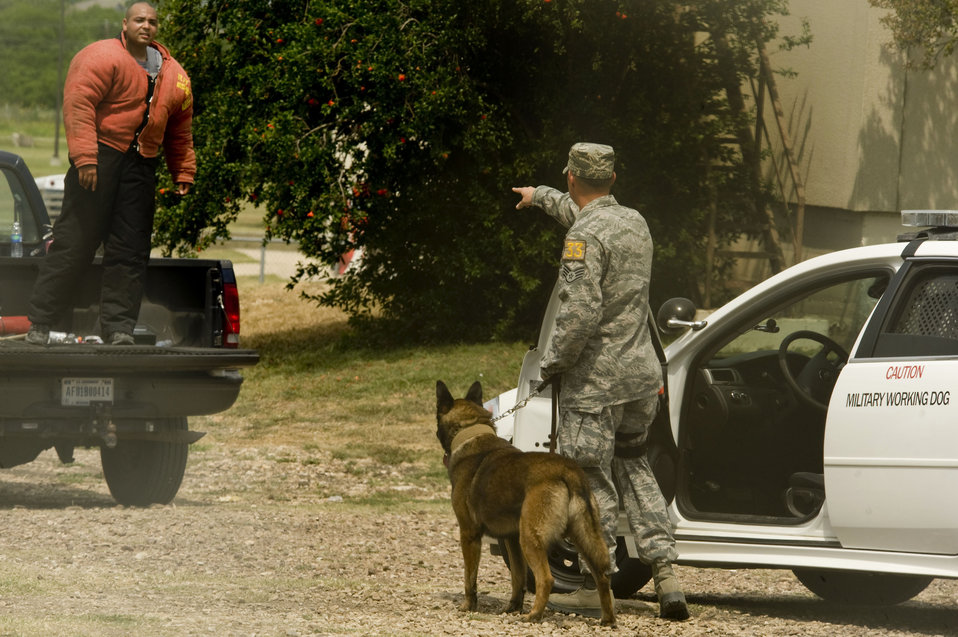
Military working dog handlers come together for joint competition

Staff Sergeant Heath Conley, a 71st Security Forces Squadron dog handler, calls out commands during a scenario in the Department of Defense Military Working Dog K-9 Trials held at Joint Base San Antonio-Lackland, Texas, May 4, 2012. More than 40 teams from each branch of service will compete in different obstacles and scenarios during the trials.